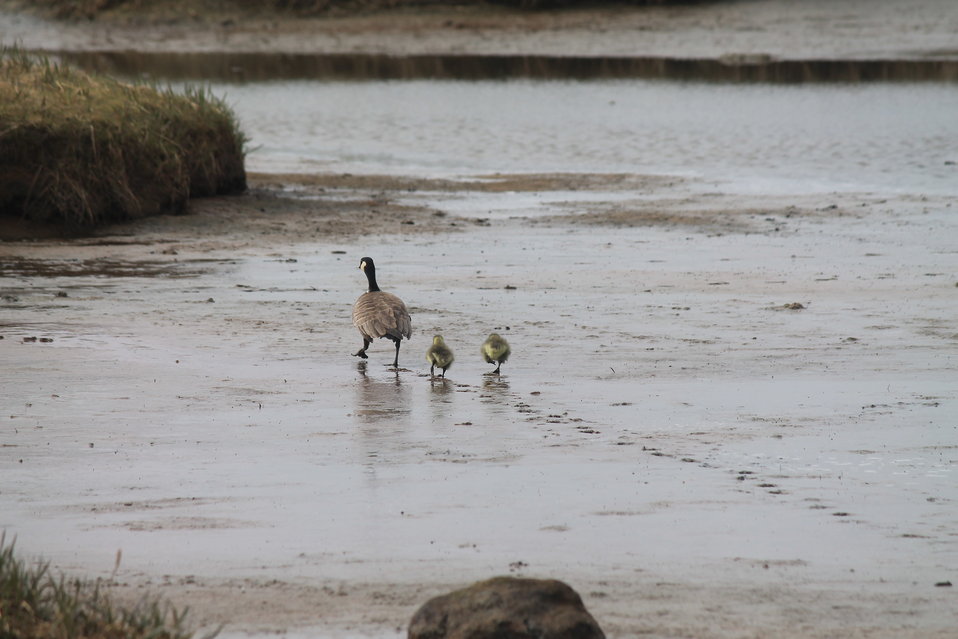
Cackler Family

During hatch broods of waterfowl, shorebirds, geese, etc can be found scurrying from place to place.

USFWS Yukon Delta NWR